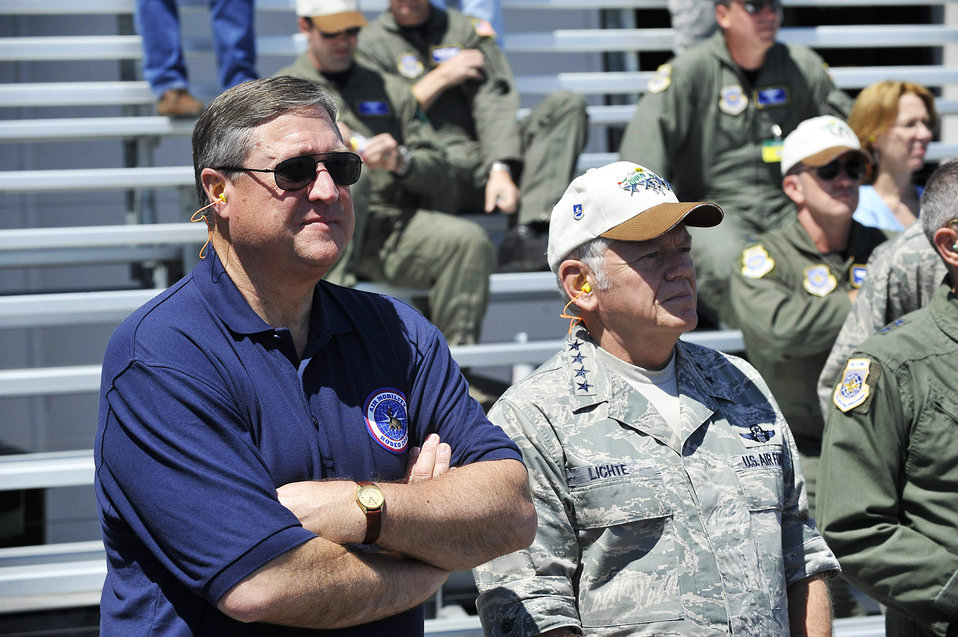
Secretary Donley visits mobility air forces competition

Secretary of the Air Force Michael B. Donley and Gen. Arthur J. Lichte watch an Air Mobility Rodeo 2009 event July 22 at McChord Air Force Base, Wash. Secretary Donley held a town hall meeting with Rodeo participants during his visit to thank them for their dedication and service. General Lichte is the commander of Air Mobility Command.